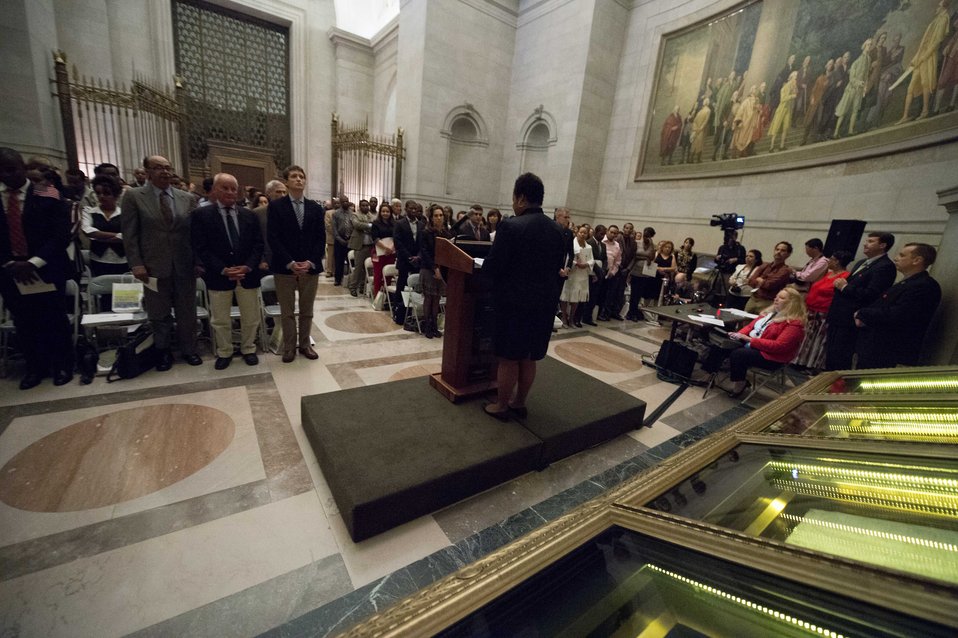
Constitution Day Naturalization Ceremony

Petitioners stand as their names are called